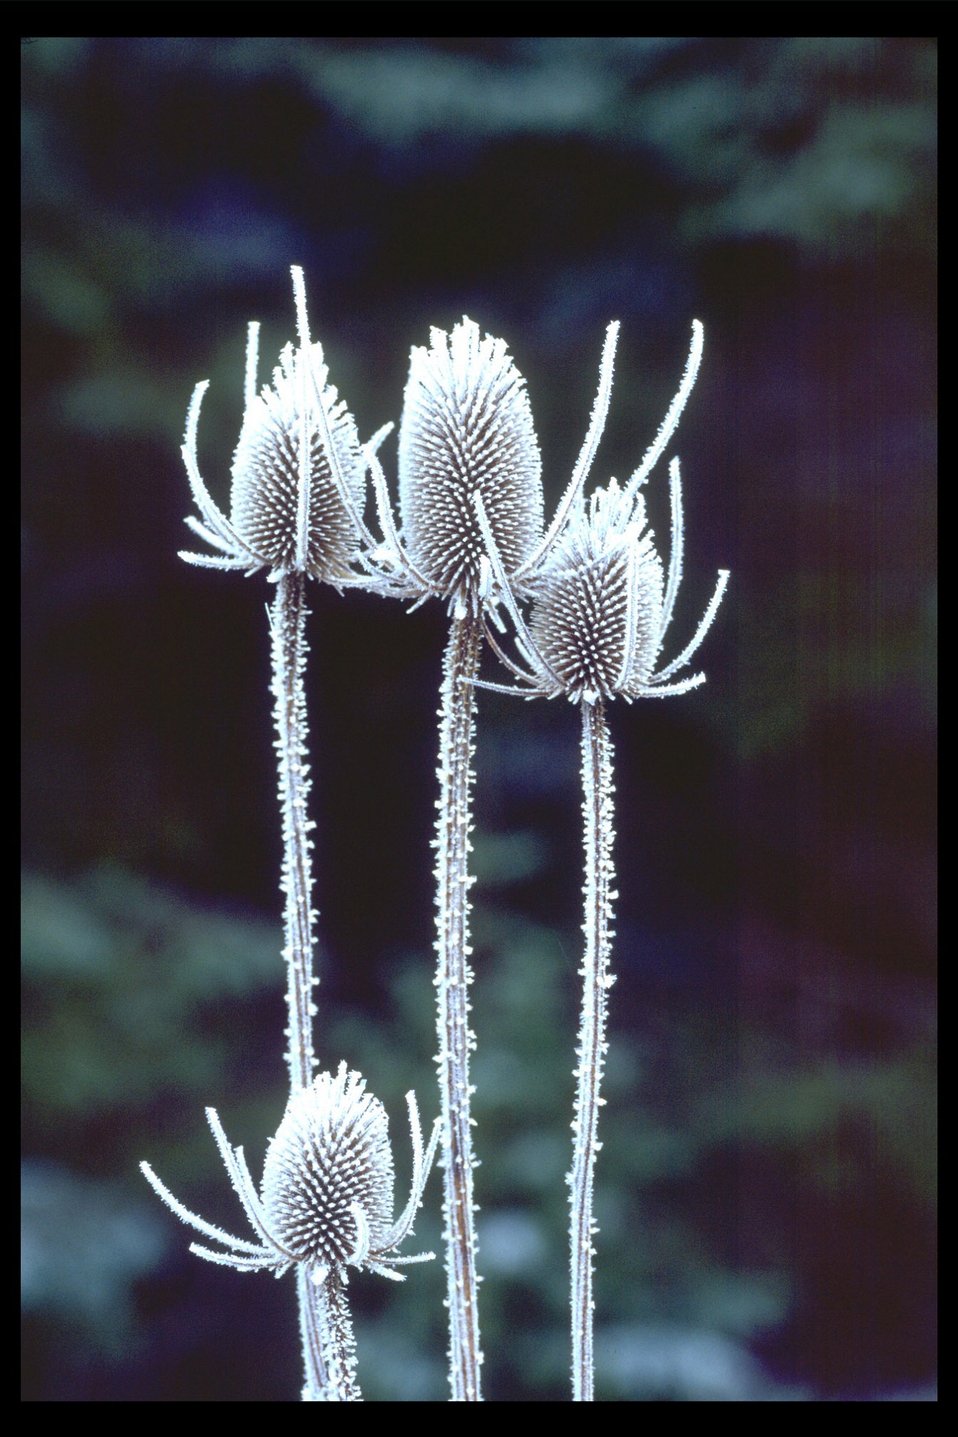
Frosted Thistle along East Evans Creek.